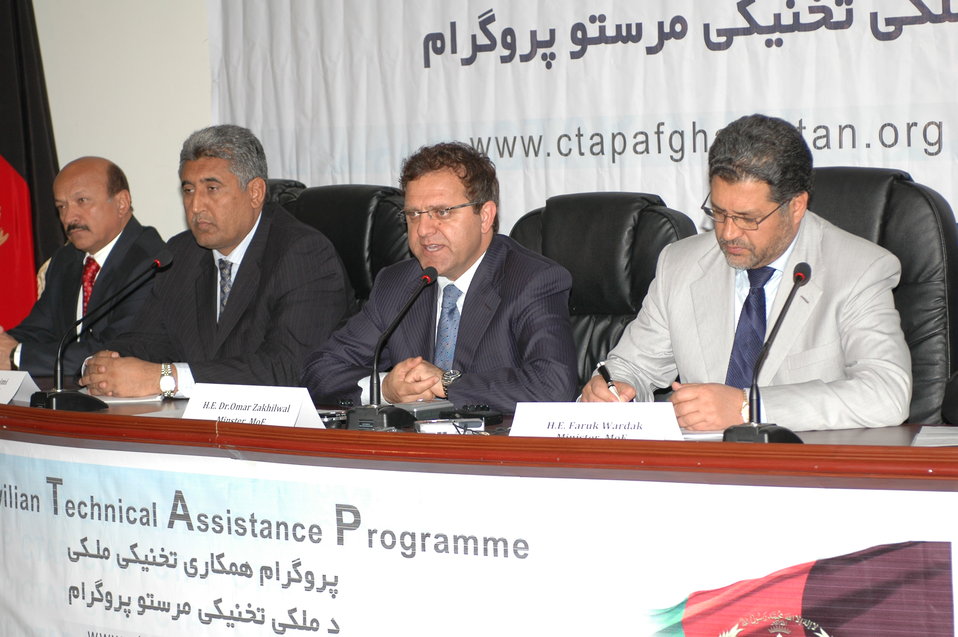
آغاز برنامه همکاری تخنیکی ملکی